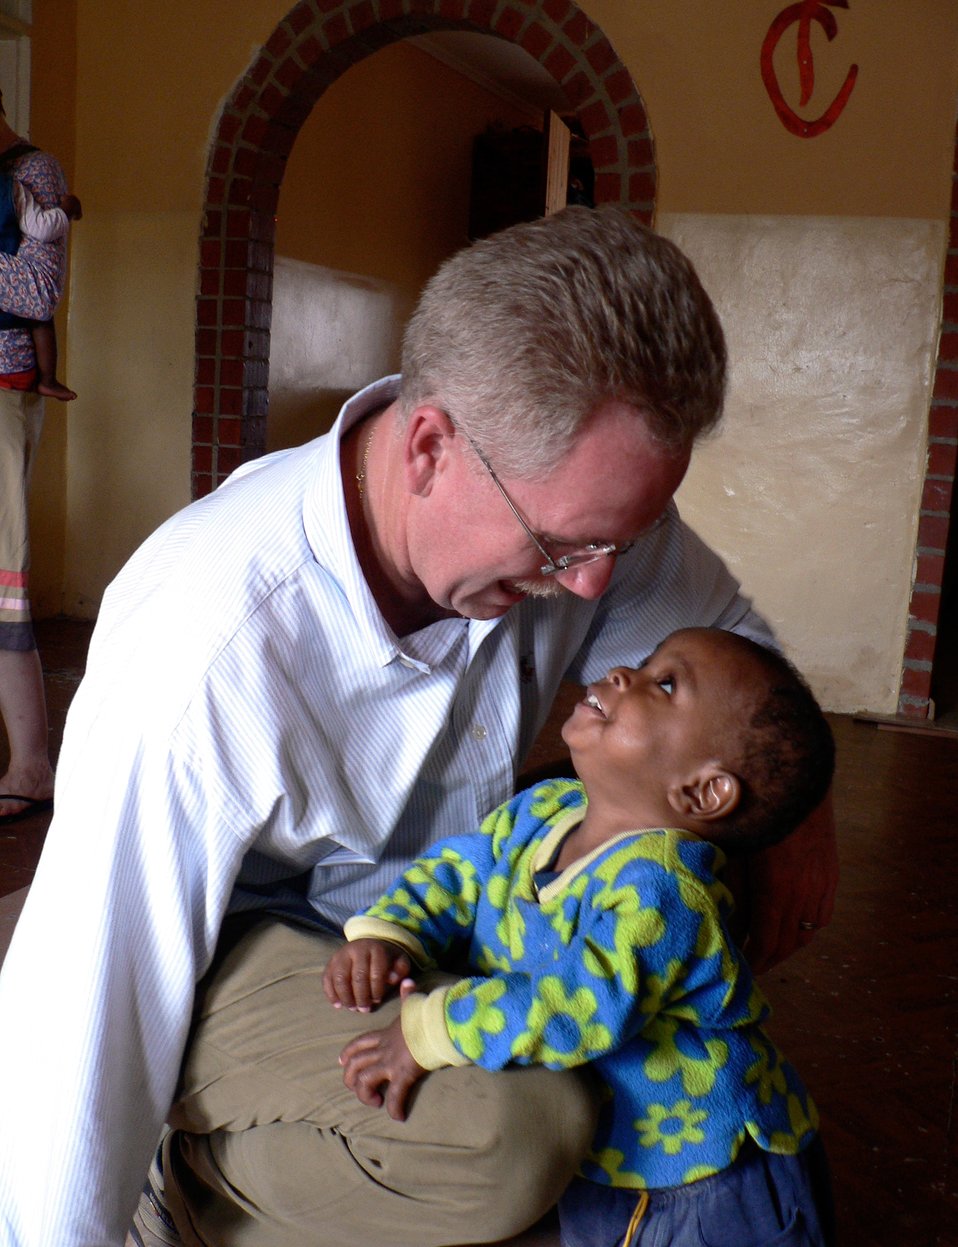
AF doctor wins AFA award

Pediatric Cardiologist Lt. Col. (Dr.) Kirk A. Milhoan, 59th Maternal/Child Care Squadron, spends a moment with Simon, who was brought to a Zambia orphanage very close to death. With care and treatment he received there, Simon was able to once again be a vibrant and energetic child. The orphanage in Kitwe, Zambia, was founded in 2003 with the help of Dr. Milhoan.